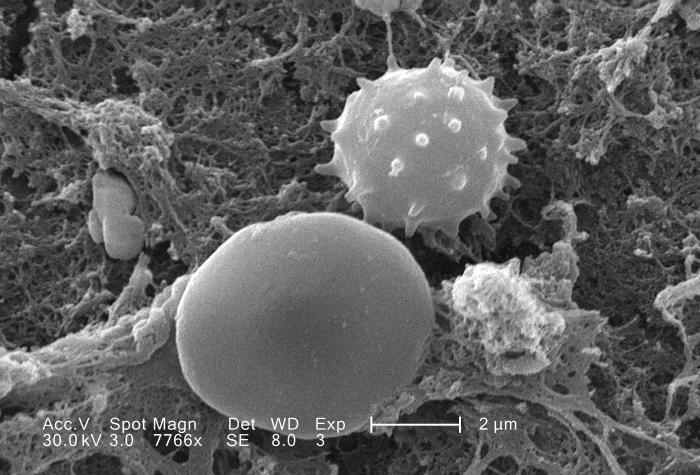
This scanning electron micrograph (SEM) depicted a number of red blood cells found enmeshed in a fibrinous matrix on the luminal surface of an indwelling vascular catheter; Magnified 7766x. In this instance, the indwelling catheter was a tube that was left in place creating a patent portal directly into a blood vessel. The cell in the center displaying a knobby surface, was a white blood cell, also known as a leukocytes.